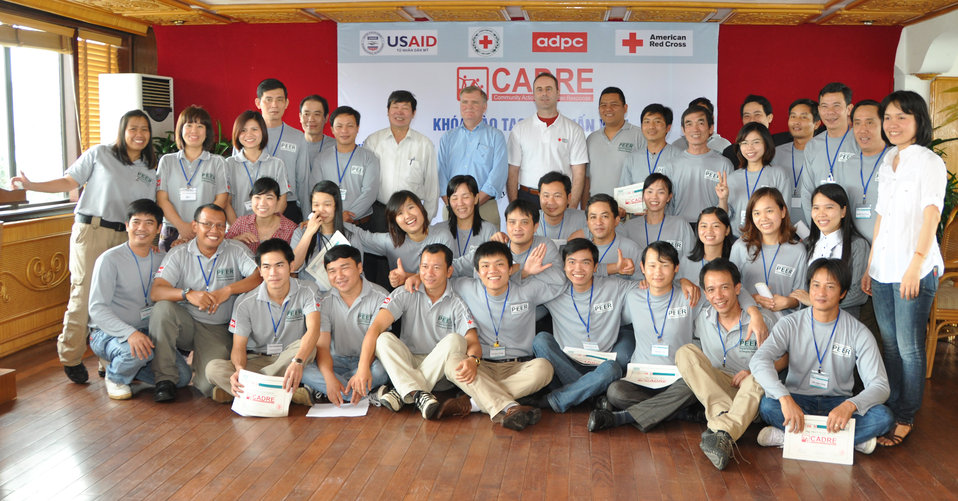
USAID Program Officer Director Michael Foster awards certificates to Red Cross workers.